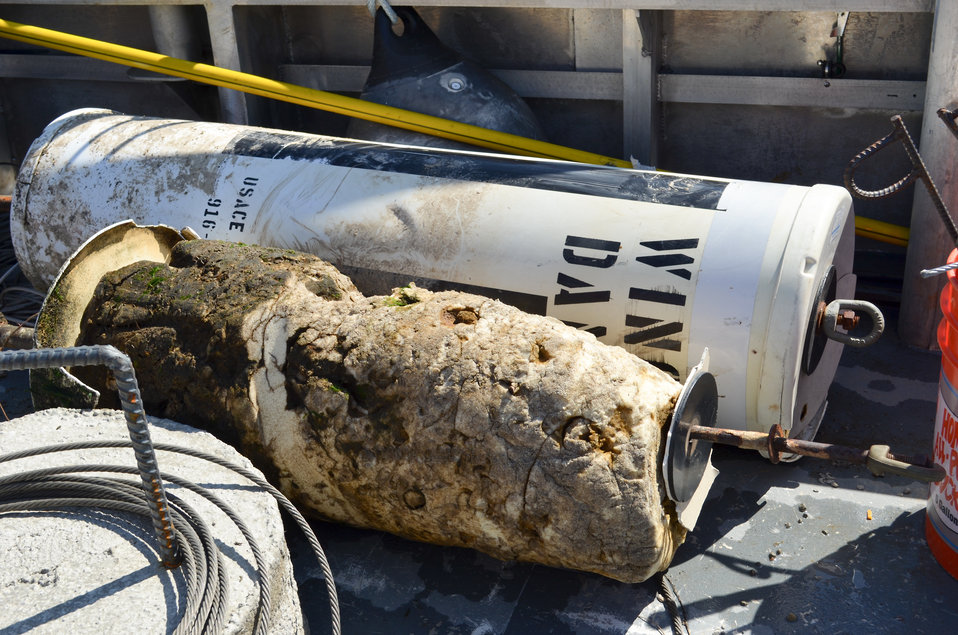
Replacing buoys for safer river navigation

Two U.S. Army Corps of Engineers Sacramento District wing dam buoys from the Sacramento River near Sacramento, Calif., shown March 21, 2012, show varying degrees of wear and tear. The district maintains 54 wing dam buoys on the Sacramento River between its confluences with the Feather River to the north and the American River to the south, making sure they’re in working order and properly placed. The buoys warn boaters of underwater structures called wing dams, which slow river bank erosion while helping the river naturally dredge itself.